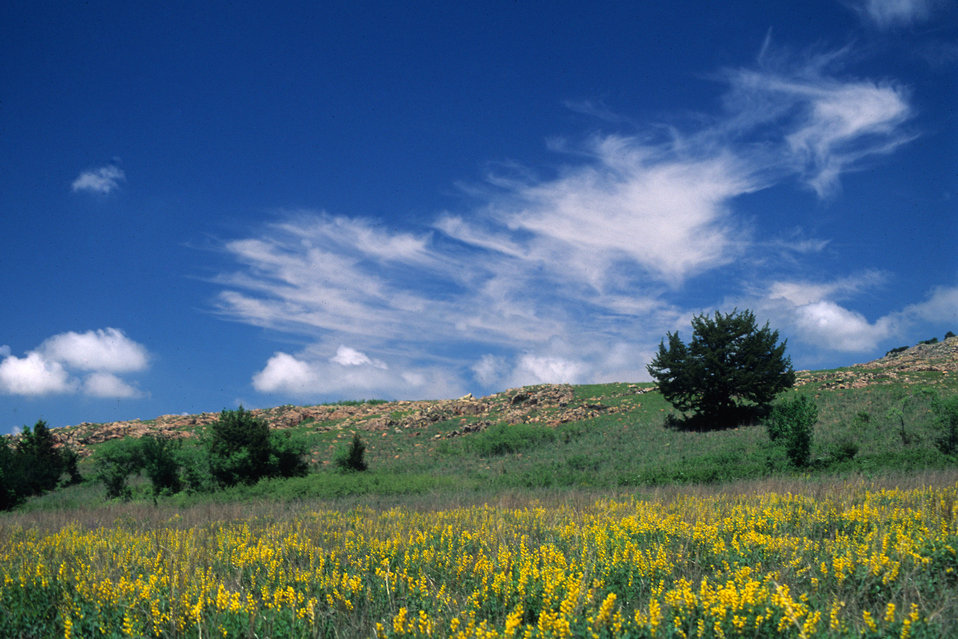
Baptisia sp. in field

Spring wildflowers at Wichita Mountains Wildlife Refuge in Oklahoma.